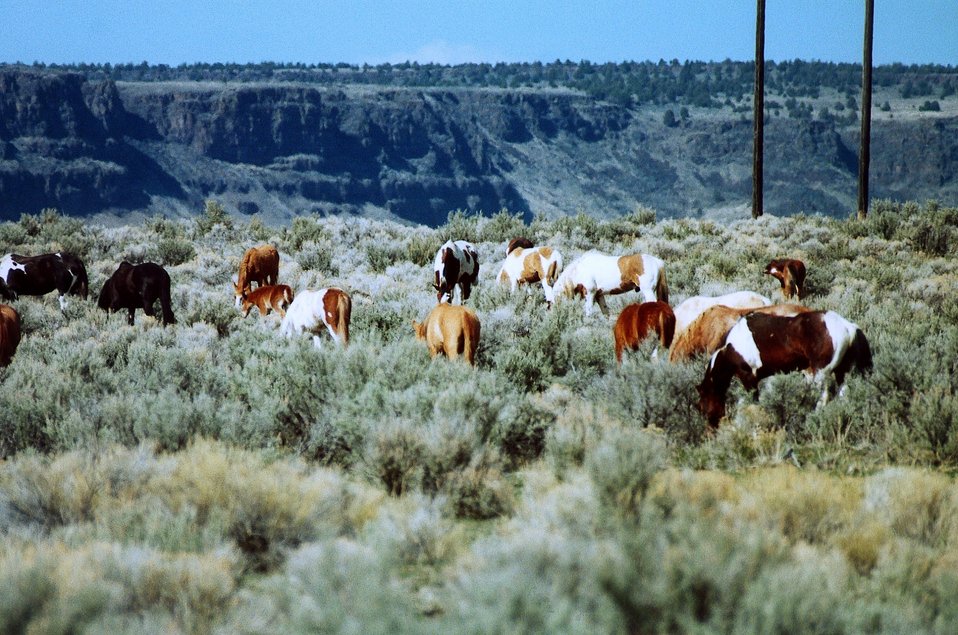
Medium shot of bachelor stallions grazing on South Steens prairie.